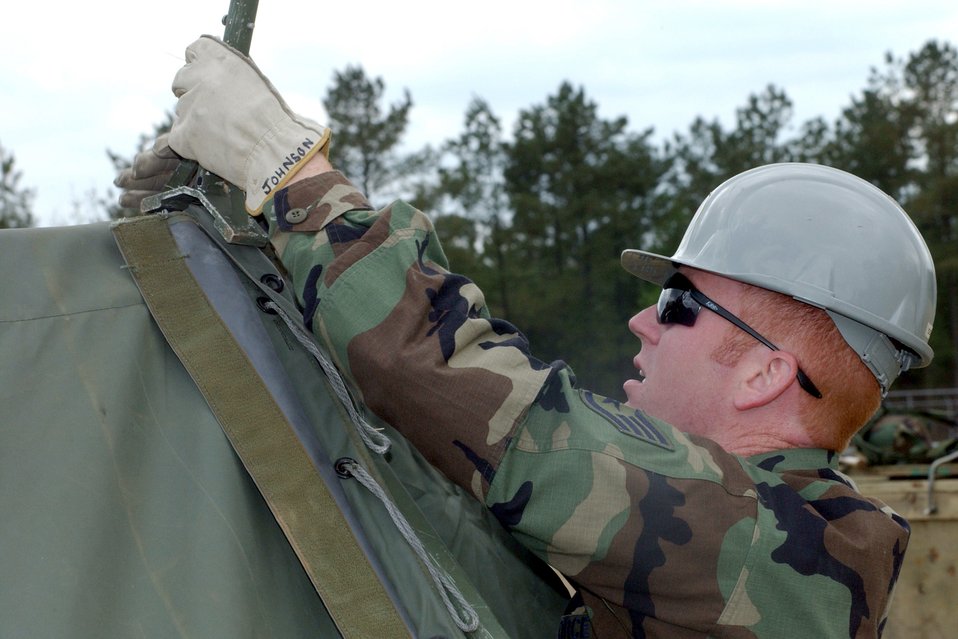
Home away form home

MCENTIRE AIR NATIONAL GUARD STATION, S.C. -- Staff Sgt. Brent Johnson helps assemble tents here April 1 during a field exercise. Sergeant Johnson is a member of the South Carolina Air National Guard's 245th Air Traffic Control Squadron.